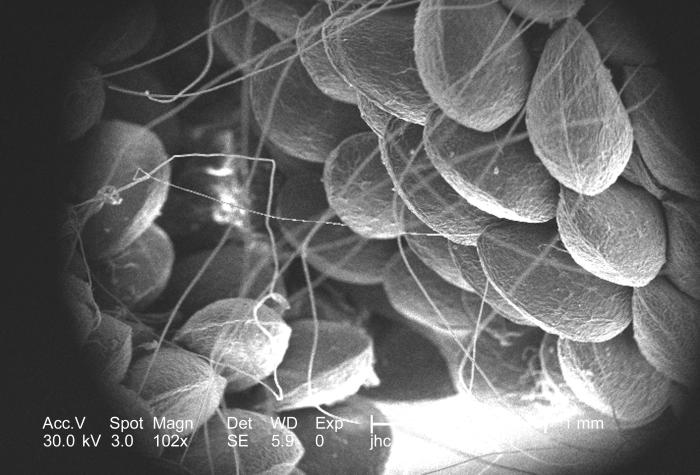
Under a relatively low magnification of 102x, this scanning electron micrograph (SEM) depicted the clustered exterior appearance of commonly growing wild strawberries, Fragaria virginiana, that were found growing in Lullwater Park, inside the Decatur, Georgia suburbs. The F. virginiana fruiting bodies are very similar to the more familiar store-bought varieties, and those who've tasted these fruits say that they're quite delicious.